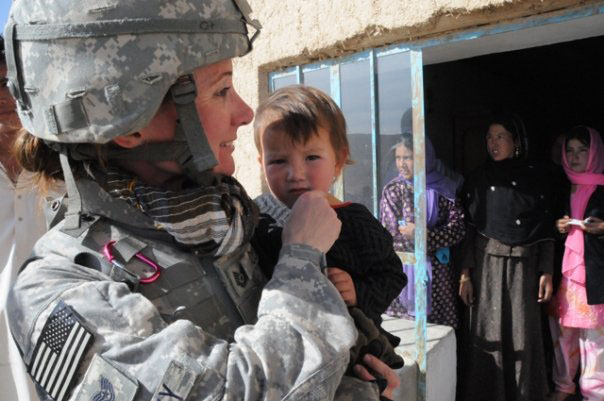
Little joys along the way

Then-Tech. Sgt. Rebecca Corey smiles as she holds a child while visitng a woman's vocational school in Ghazni province, Afghanistan, during her deployment in 2009. The child was about the same age as Corey's son at the time and the women at the school were surprised that she had a child back at home but was in Afghanistan deployed.